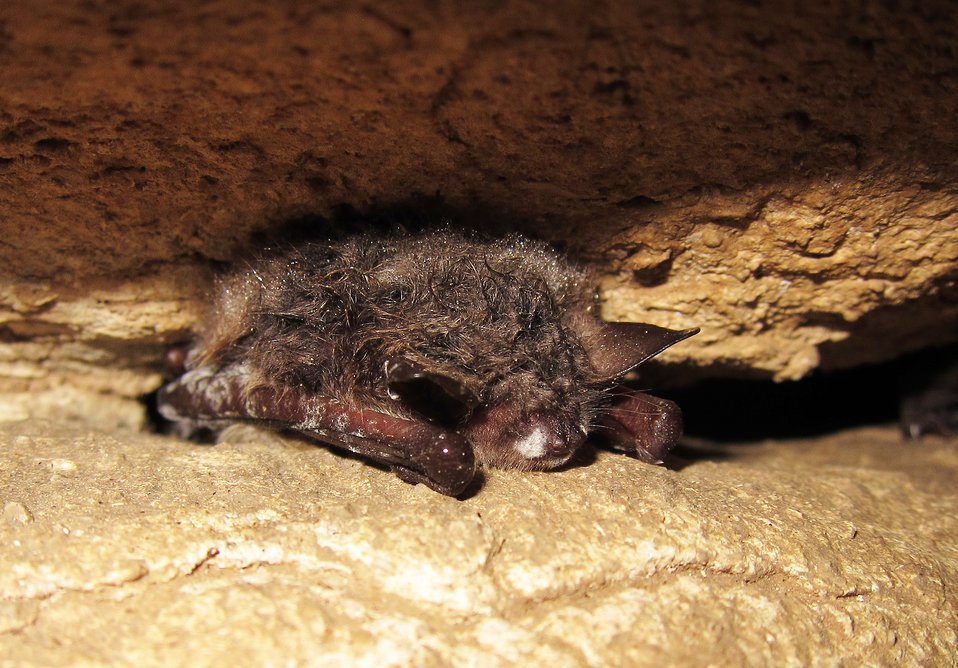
Northern long-eared bat with visible symptoms typical of WNS

A northern myotis (Myotis septentrionalis) with suspected White Nose Syndrome. Note fungal growth on face and forearm. At a Monroe County, Illinois hibernaculum. Histopathological confirmation of White Nose Syndrome for this animal is still pending. 13 February 2013.